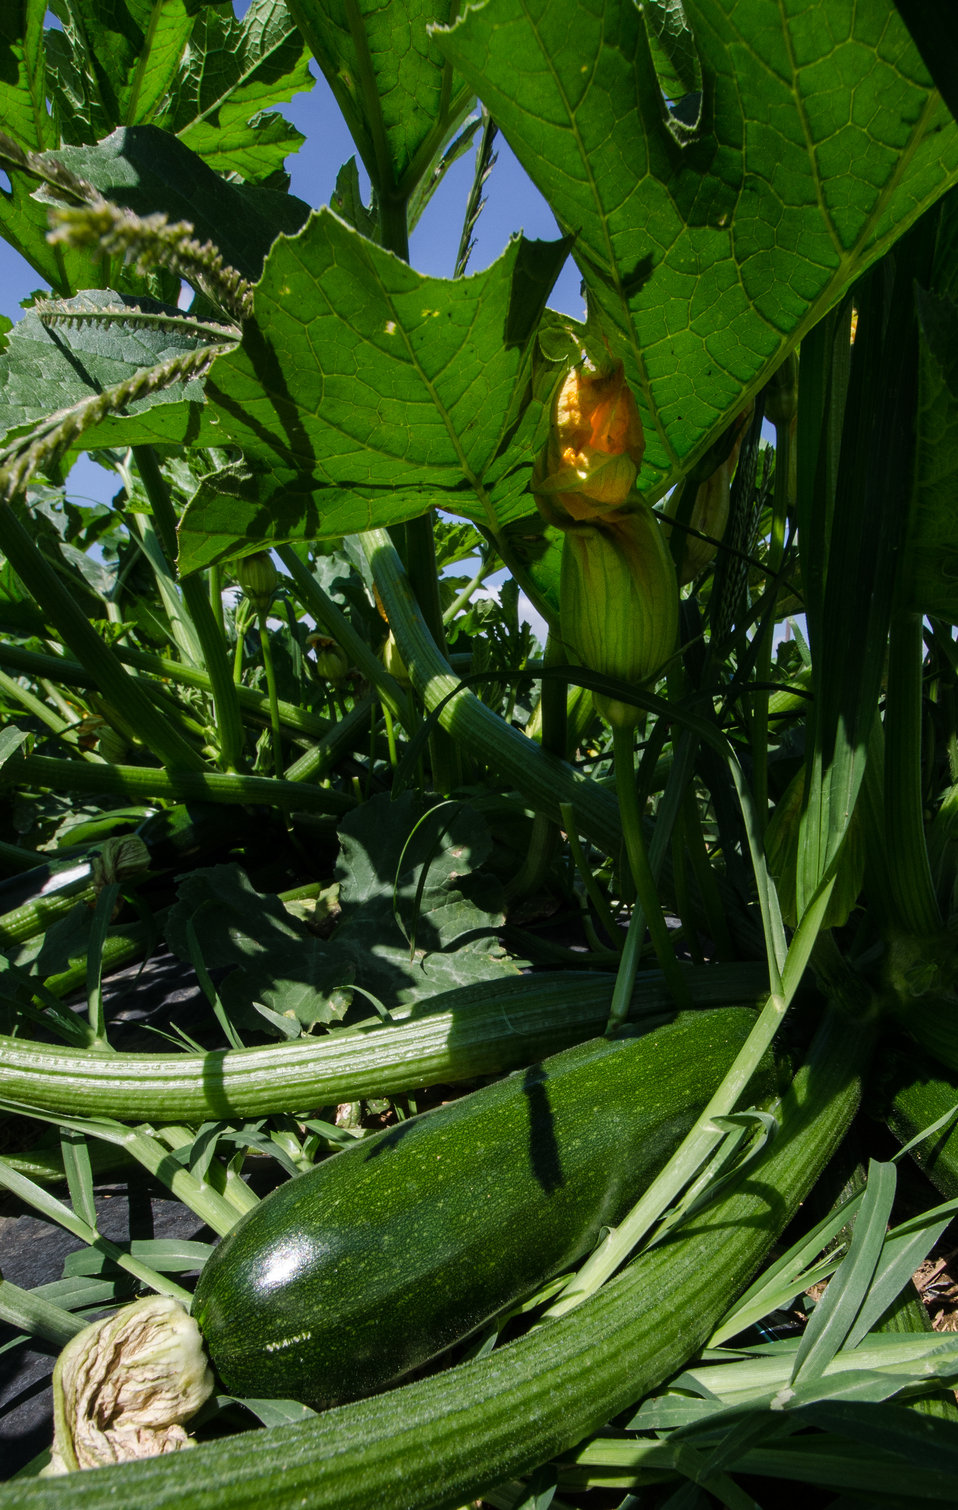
Kirby Farms third-generation family farm in Mechanicsville, VA, uses micro irrigation (drip watering) and plastic mulch (row covering) to efficiently grow green zucchini squash, on Friday, Sept 20, 2013. Water is pumped through a filtration/regulator system to flexible distribution pipes and hard connectors. Emitter hoses can be driven in where needed. Pressurized hoses emit water at a very slow rate near the base of the plants. Computers or timers provide additional controls. A micro irrigation system, also known as drip or trickle irrigation, is used to water directly to the plant root zone utilizing surface or subsurface applicators. For more information please see www.nrcs.usda.gov/Internet/FSE DOCUMENTS/nrcs141p2 024038...
Plastic sheeting is a form of mulch. It conserves soil moisture and reduces energy
use associated with irrigation, moderates soil temperature, provide erosion control, suppresses weed growth, facilitates the establishment of vegetative cover, improves soil quality, and reduces airborne particulates.